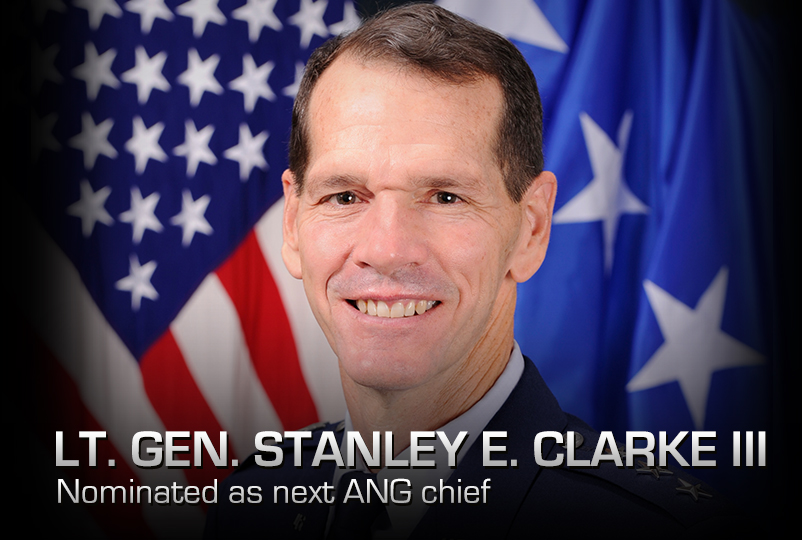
Lt. Gen. Stanley E. Clarke III